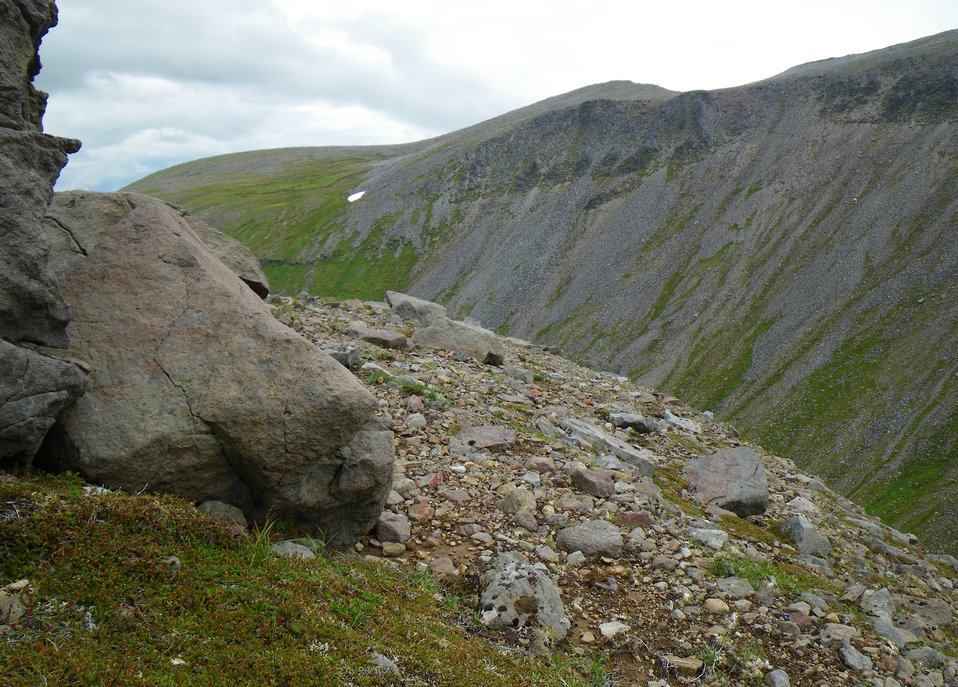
Izembek Wilderness

Wilderness near Frosty Peak, Izembek National Wildlife Refuge
Photo by Kristine Sowl,
USFWS, Public Domain